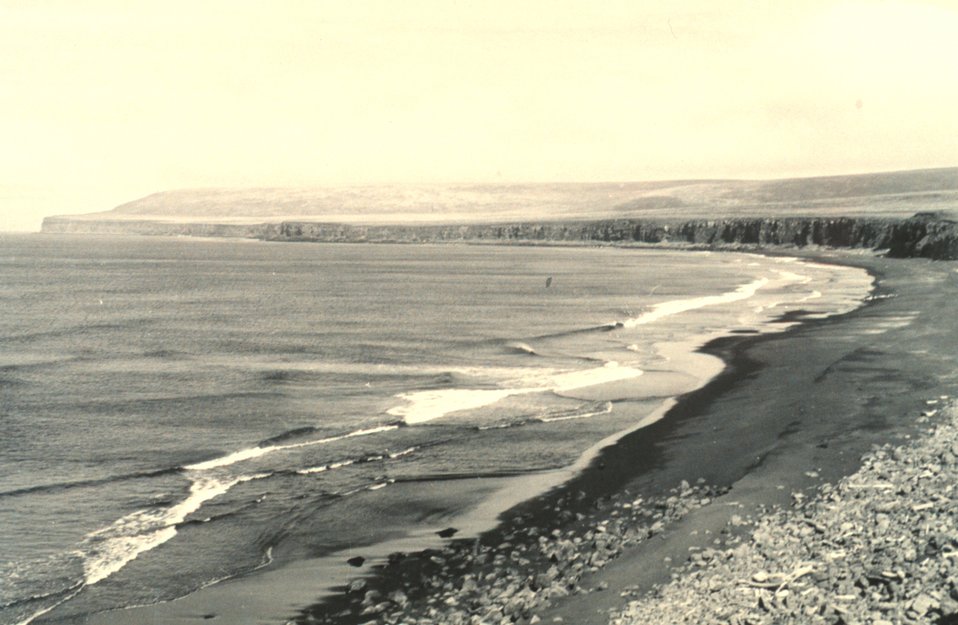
Looking toward Tolstoi Rookery on St. Paul Island. F&WS 10,010.